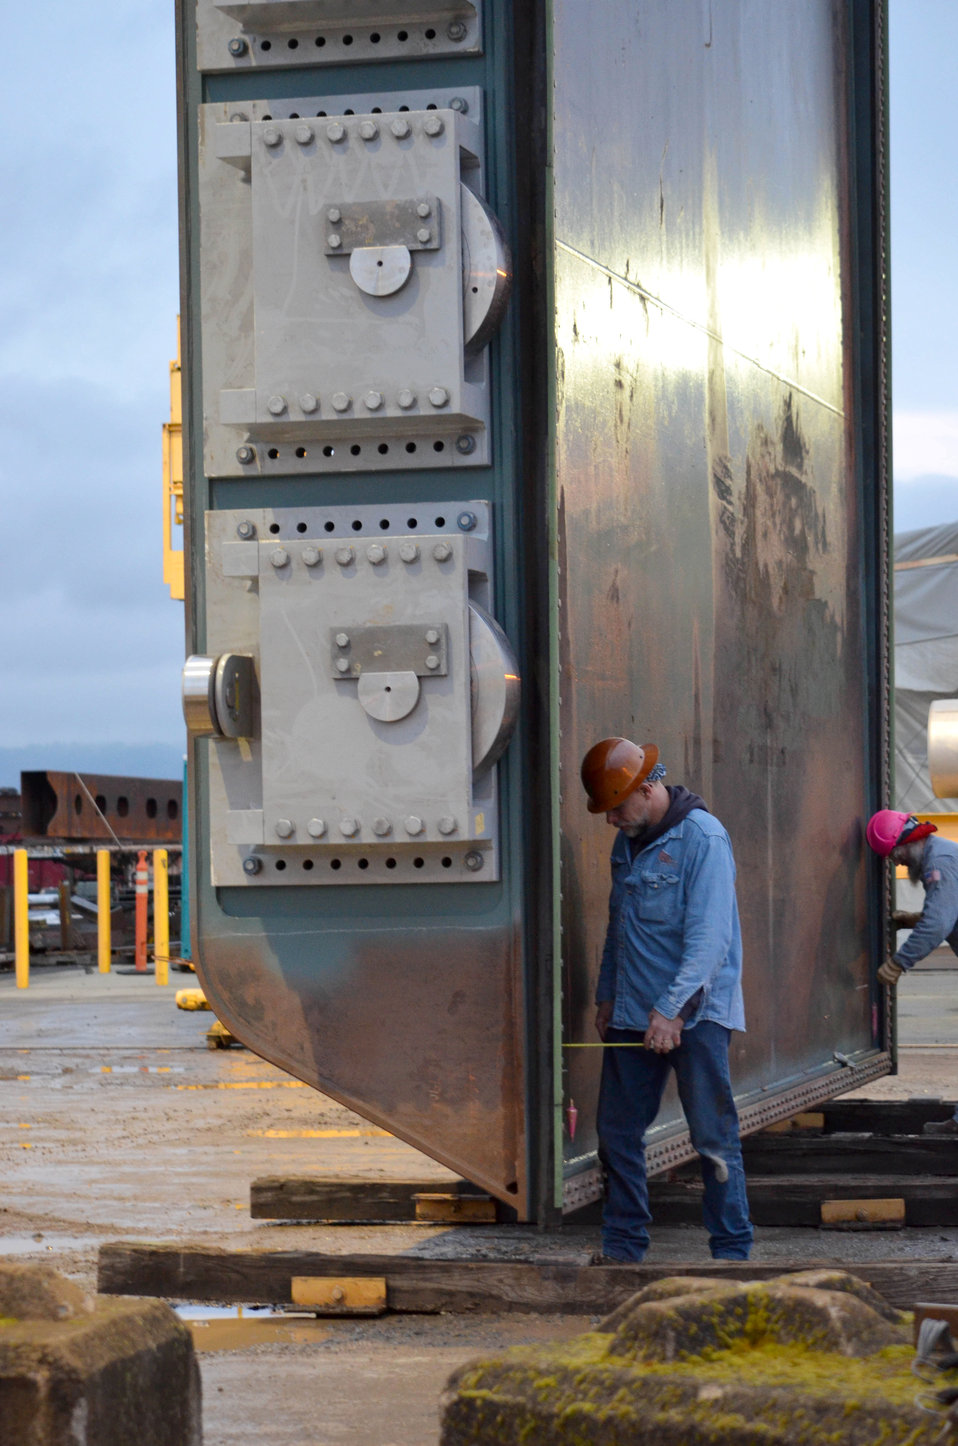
Giant Folsom spillway gates nearly ready for 600-mile journey to dam

Oregon Iron Works workers measure the distance between a string and a new bulkhead gate for the Folsom Dam auxiliary spillway to make sure it hangs straight during a hang test Feb. 1, 2014, at the Oregon Iron Works facility in Vancouver, Wash. The gates will be trucked more than 600 miles to Folsom Dam, where they will be installed on a new auxiliary spillway in 2014.